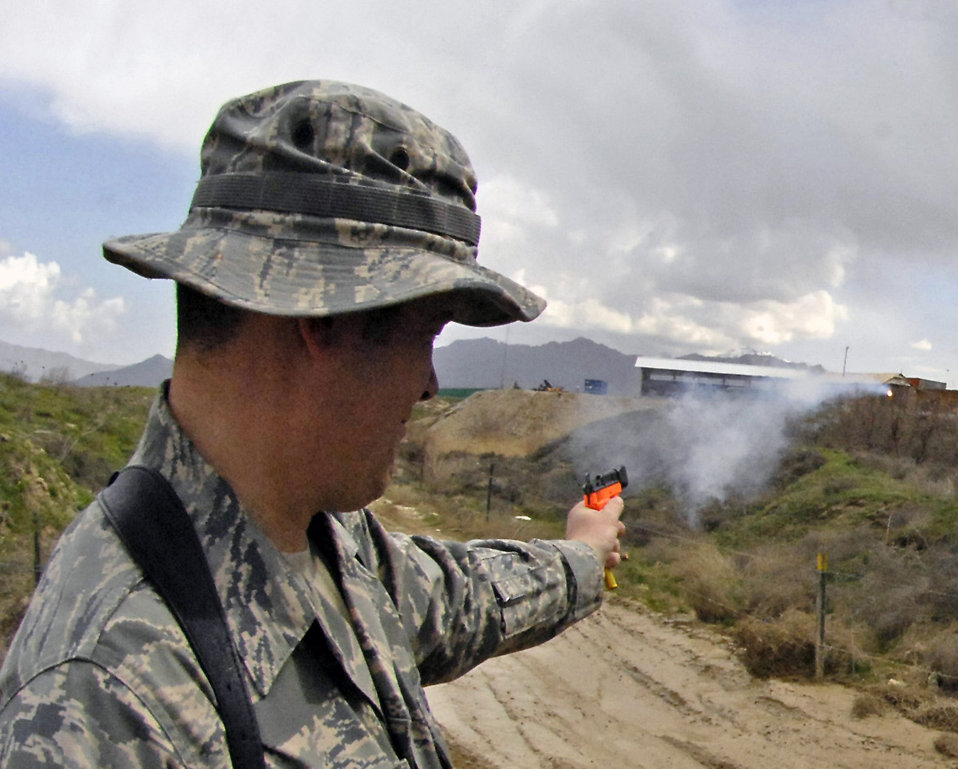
Safety experts spearhead efforts to minimize bird strikes

Tech. Sgt. Shane Sweeney fires off pyrotechnics that helps scare off birds near the flightline March 29 at Bagram Airfield, Afghanistan. The seven-member team of safety experts here patrol hot spots around the airfield's flightline to minimize the threat of bird strikes on the various aircraft taking off and landing. Sergeant Sweeney is a 455th Air Expeditionary Wing weapons safety member.